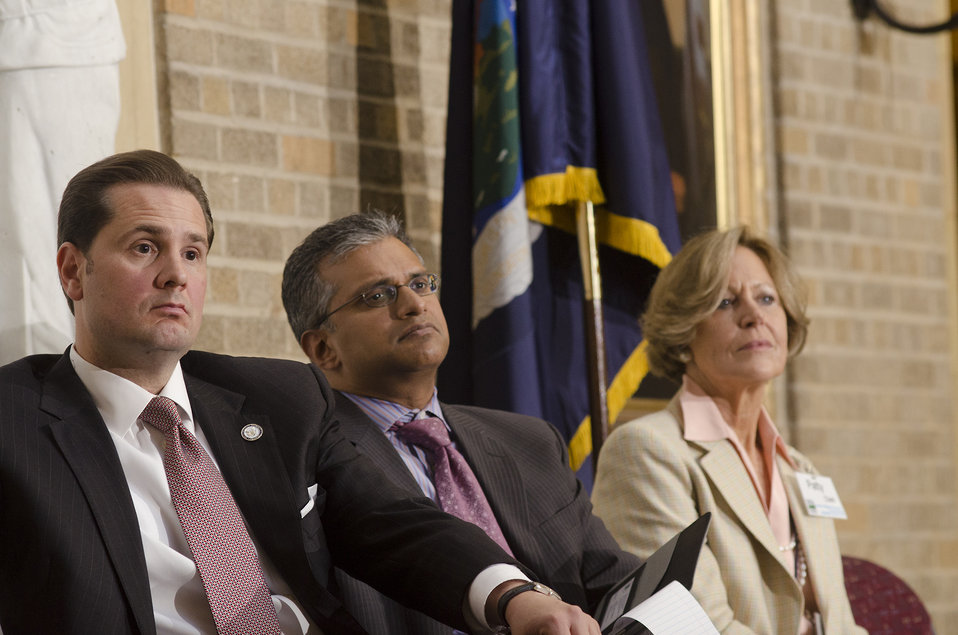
(seated L to R) Delta Regional Authority Federal Co-Chairman Christopher Masingill, U.S. Department of Housing and Urban Development (HUD) Office of Sustainable Housing and Communities Acting Director Salin Geevarghese, U.S. Department of Agriculture (USDA) Rural Development (RD) Kansas State Director Patty Clark listen to USDA Under Secretary Rural Development (RD) Doug O’Brien speak at the closing session of the White House Rural Forum on Regional Innovation on the patio in the Whitten Building at USDA on Thursday, Sep. 19, 2013.